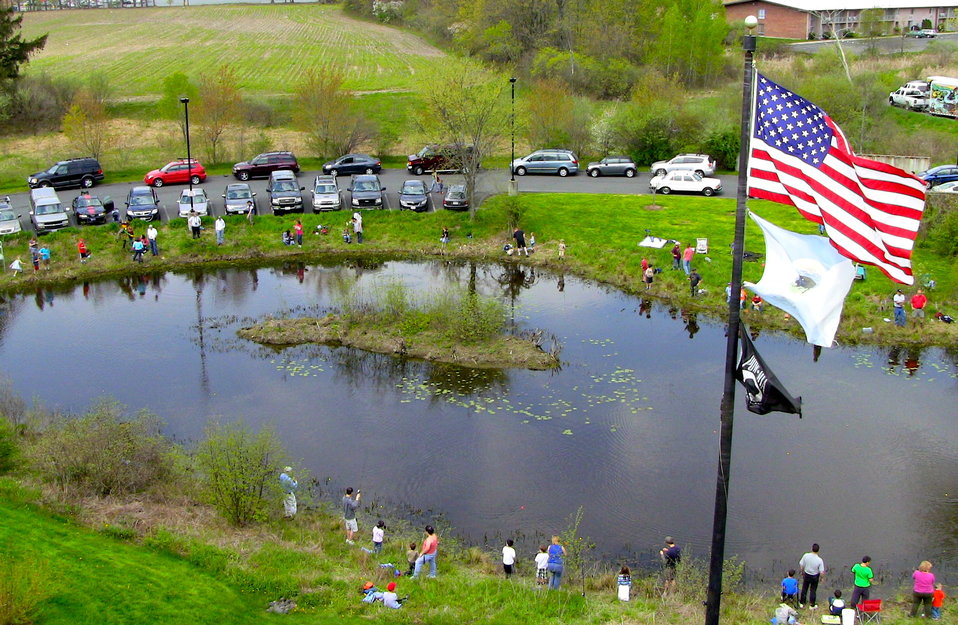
Annual Fishing Derby

Overhead shot of the Annual Fishing Derby held at the USFWS regional office in Hadley, MA.